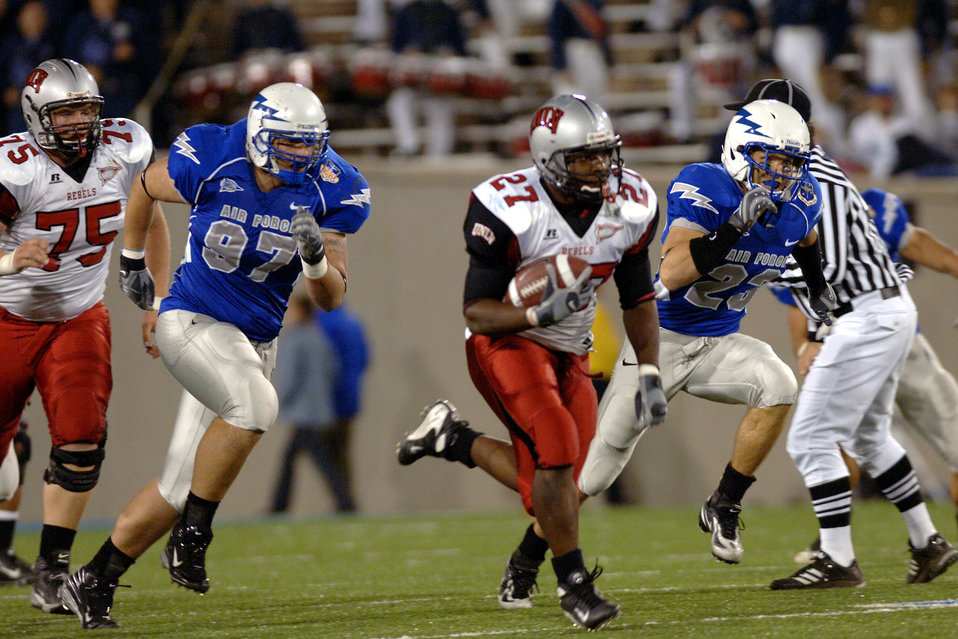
Falcons back on winning track, 31-14

Air Force Defensive end Josh Clayton, 97, and free safety Aaron Kirchoff pursue UNLV running back Chris Brogdon during the Falcons 31-14 victory over the Rebels. Brogdon ran for 28 yards on the play.